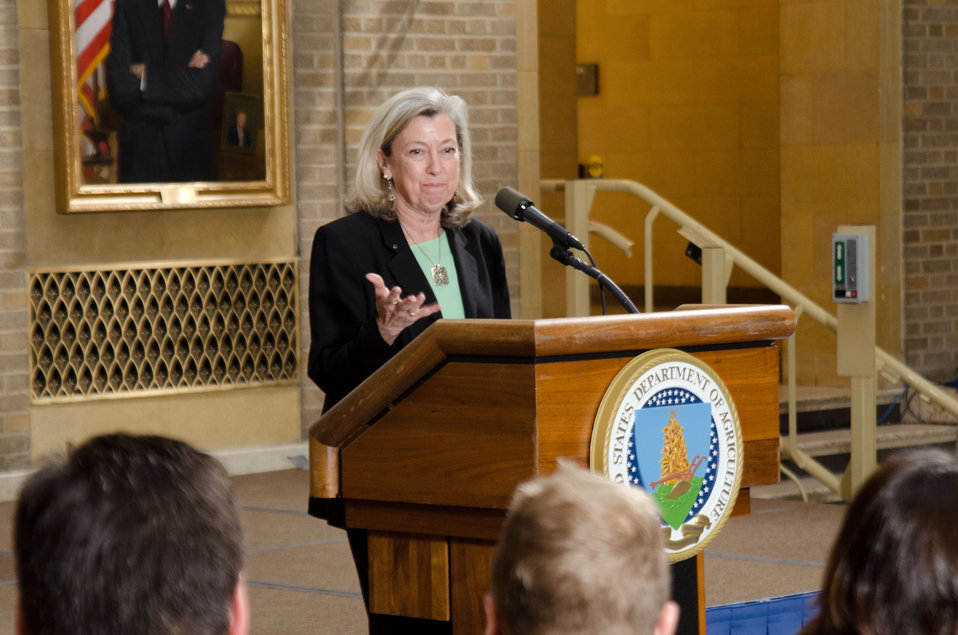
Agriculture Foreign Agriculture Service Acting Administrator Suzanne Heinen made remarks and administered the oath of office during the Foreign Service Oath of Office Ceremony at the U.S. Department of Agriculture, on Thursday, March 15, 2012.